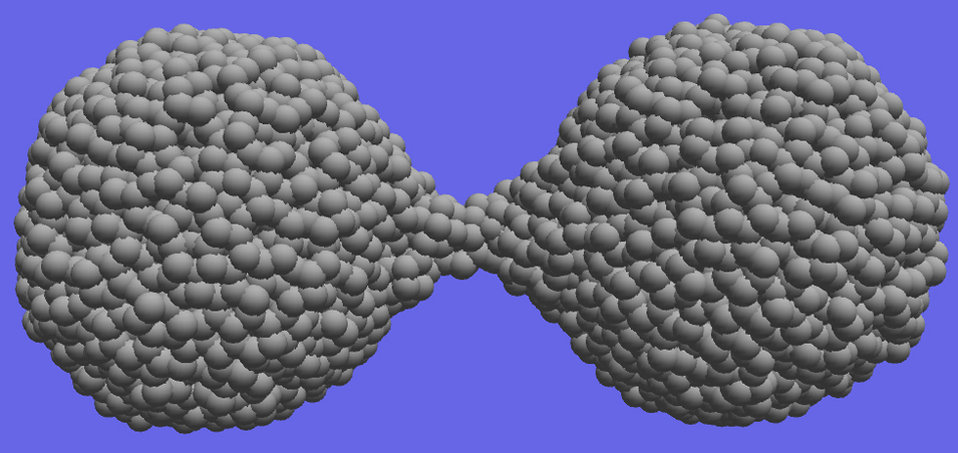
Nanoscale Ductility

NIST researchers have shown that substances such as silica that are brittle in bulk exhibit ductile behavior at the nanoscale. Computer simulations demonstrate the material extension and necking that occurs during the separation of amorphous silica nanoparticles.